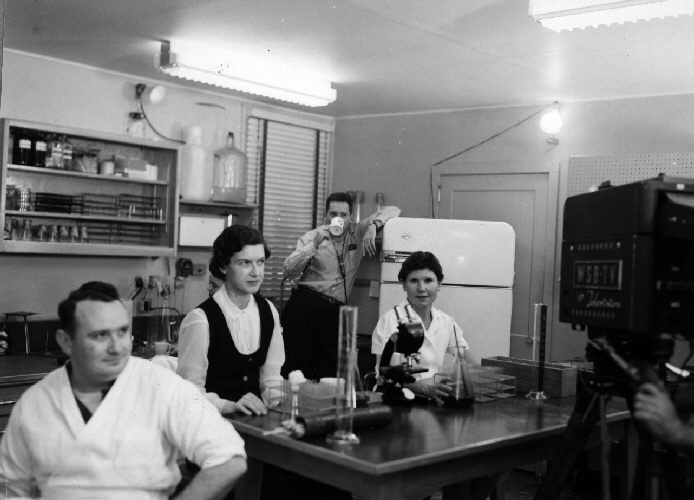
CDC Laboratory Workers on Set of Wide-Wide World Broadcast